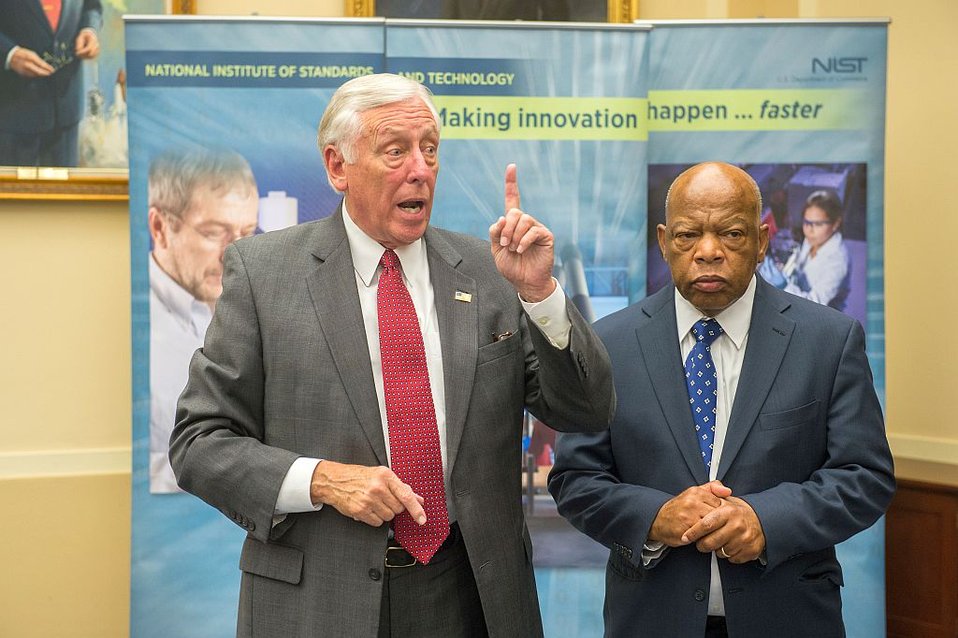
Congressman Hoyer and Congressman Lewis

Congressman Steny Hoyer, Dem. Maryland (left), and Congressman John Lewis, Dem. Georgia (right), welcome NIST 2013 Summer Undergraduate Research Fellows to the House Science Committee Hearing Room in the Rayburn Office Building.